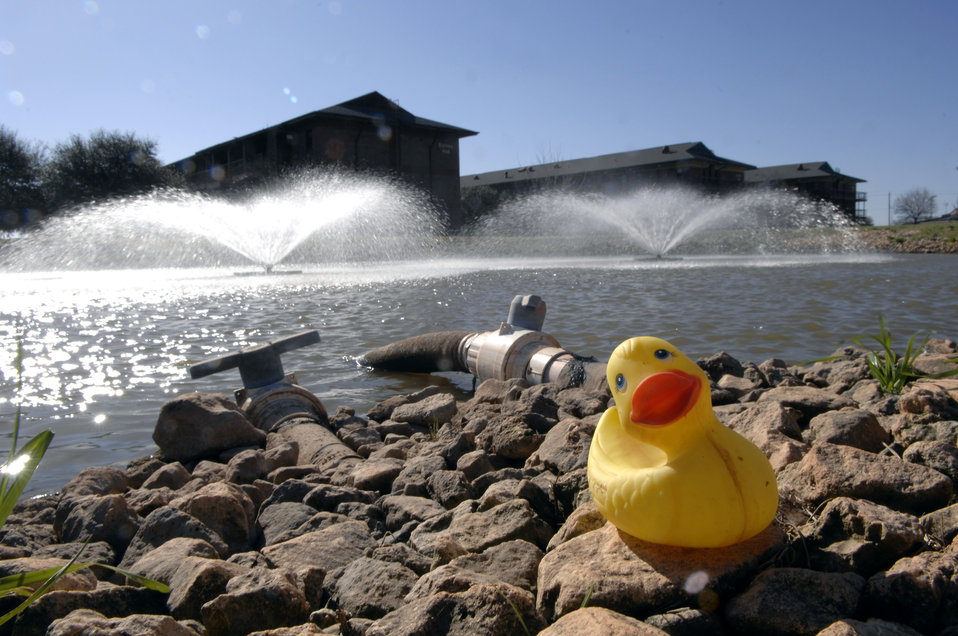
Dyess AFB model of energy conservation

The Effluent Pond is one of several environmental initiatives implemented at Dyess Air Force Base, Texas. The pond serves as a cooling tower for the base ice plant. The ice plant provides a cooling supply for fourteen buildings including the dorms, dining hall and B-1B Lancer simulator building. The base environmental office has implemented several energy-efficient programs as part of their go-green initiative. The base has already spent $1 million less on energy this year compared to the same time last year.